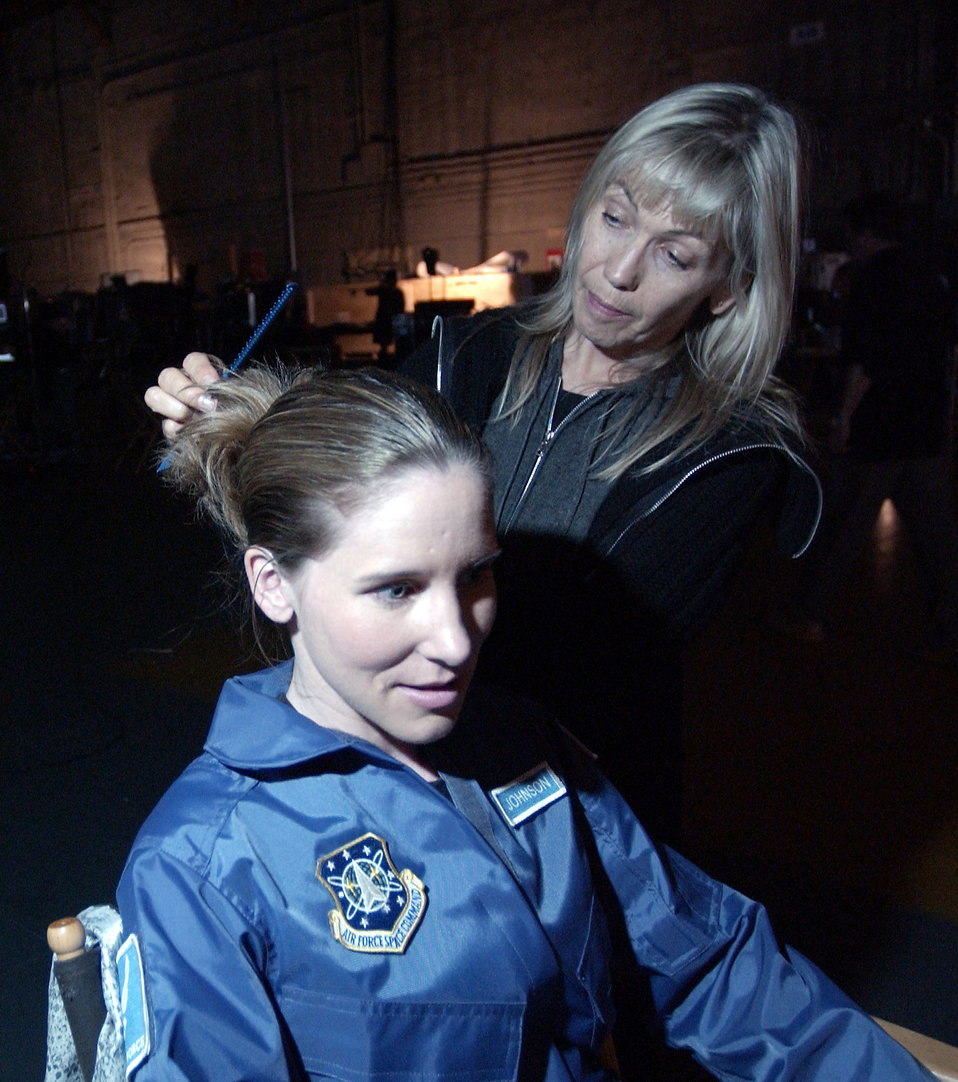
'We've Been Waiting for You' campaign returns to television

HOLLYWOOD, Calif. -- Capt. Morgan Johnson gets ready to film one of four new Air Force commercials at Universal Studios here in May. Captain Johnson is a program manager for military satellite communication ground control systems at Los Angeles Air Force Base, Calif.